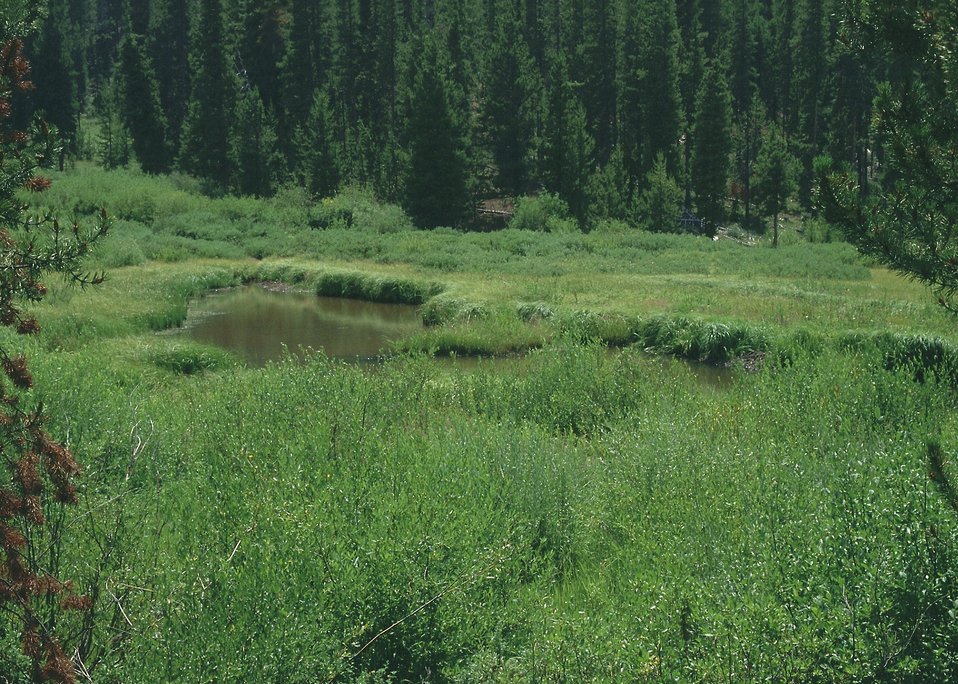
Riparian area of Behler